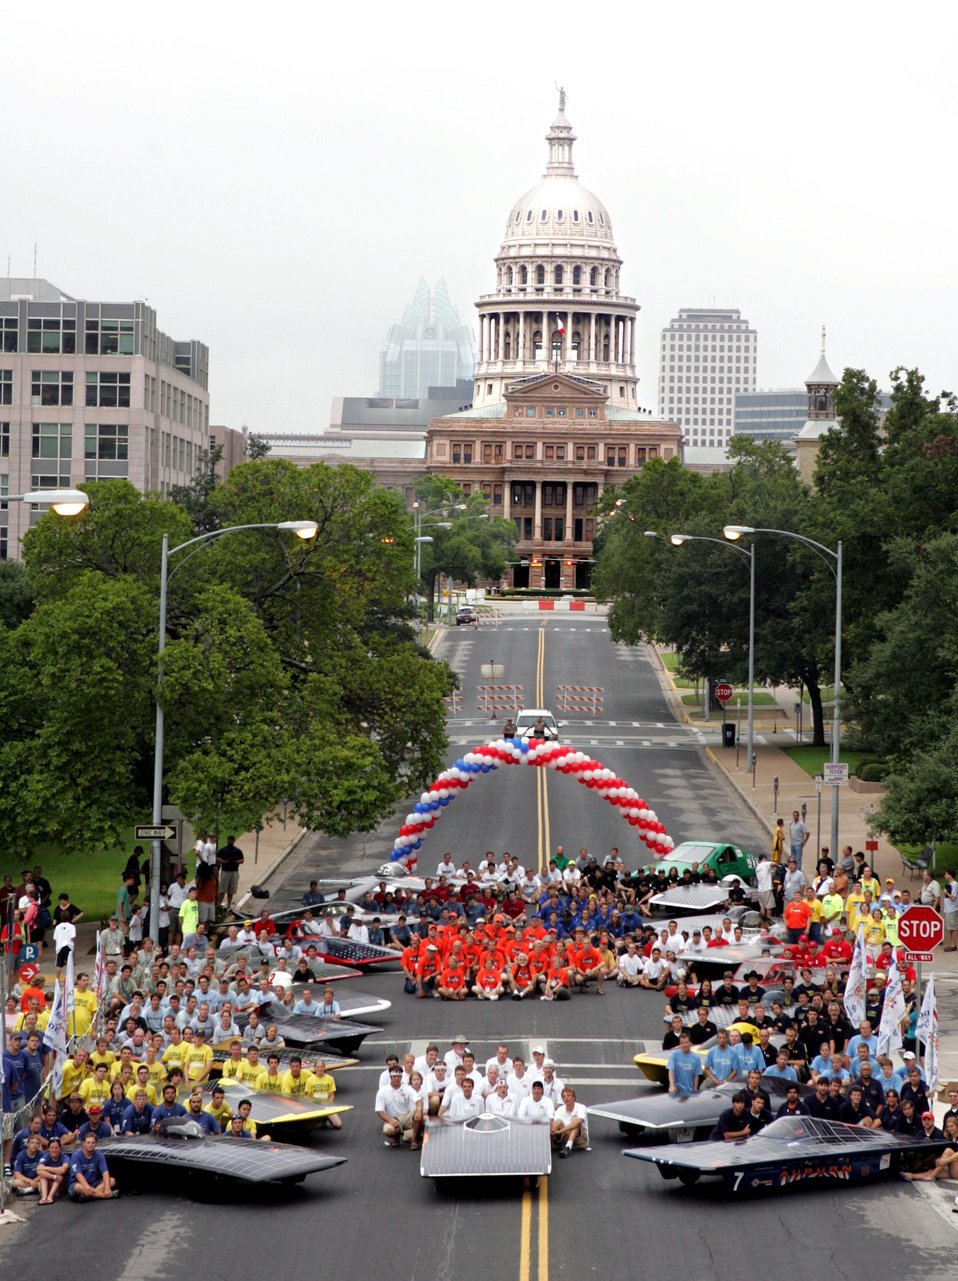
TWENTY UNIVERSITY TEAMS FROM ACROSS THE U.S. AND CANADA RACED SOLAR-POWERED VEHICLES IN THE 2005 NORTH AMERICAN SOLAR CHALLENGE.

THE 2005 NORTH AMERICAN SOLAR CHALLENGE (ASC) WAS A CROSS COUNTRY SOLAR RACE THAT WAS HELD FROM JULY 17 TO 27, 2005. THE RACE STARTED IN AUSTIN, TEXAS AND FOLLOWED U.S. ROUTE 75 AND THE TRANS-CANADA HIGHWAY (HWY 1) TO CALGARY, ALBERTA, CANADA. TEAMS FACED VARIED CLIMATES, TOPOGRAPHY AND ROAD CONDITIONS. IT WAS THE FIRST TIME THE WORLD'S LONGEST SOLAR CAR RACE WENT THROUGH THE U.S. AND CANADA.